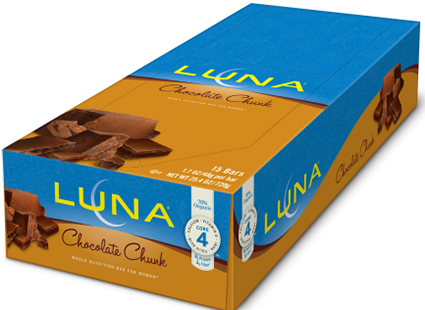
RECALLED – Chocolate bars

March 27, 2014 – Product Recall – Macadamia Nut Allergy Alert and Voluntary Recall of 15-Count Boxes of Chocolate Chunk LUNA Bars Due to Package Mislabeling.